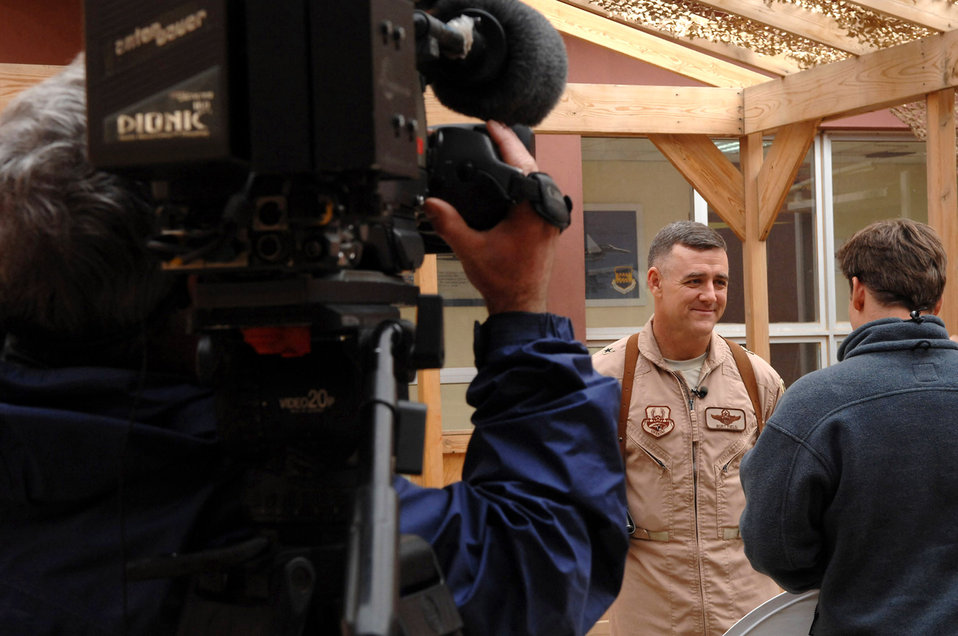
Media event showcases Air Force airpower

Brig. Gen. Burt Field is interviewed by NBC reporter Richard Engel, Jan. 30. The general discussed how the Army and Air Force integrate and synchronize their efforts here through close-air support and intelligence, surveillance and reconnaissance actions. General Field is the 332nd Air Expeditionary Wing commander.